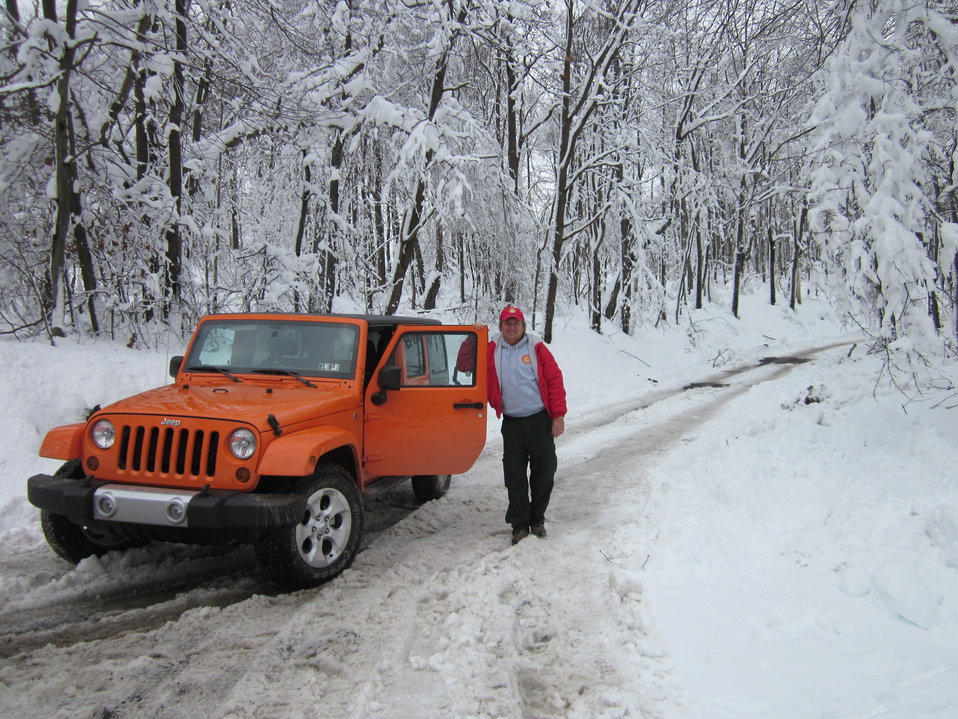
Southern Incident Commander in northern setting

Terra Alta, WV November 4, 2012: Tony Wilder, Incident Commander of the Southern Area Type 1 Red Incident Management Team stops along a road in Preston County cleared by saw crews his team supervised. Three 20-person saw crews worked with the National Guard to open over 200 miles of roads in Preston, Randolph, and Tucker Counties allowing access for residents and electric crews. Wilder is a fire management officer at Mississippi Sandhill Crane National Wildlife Refuge.